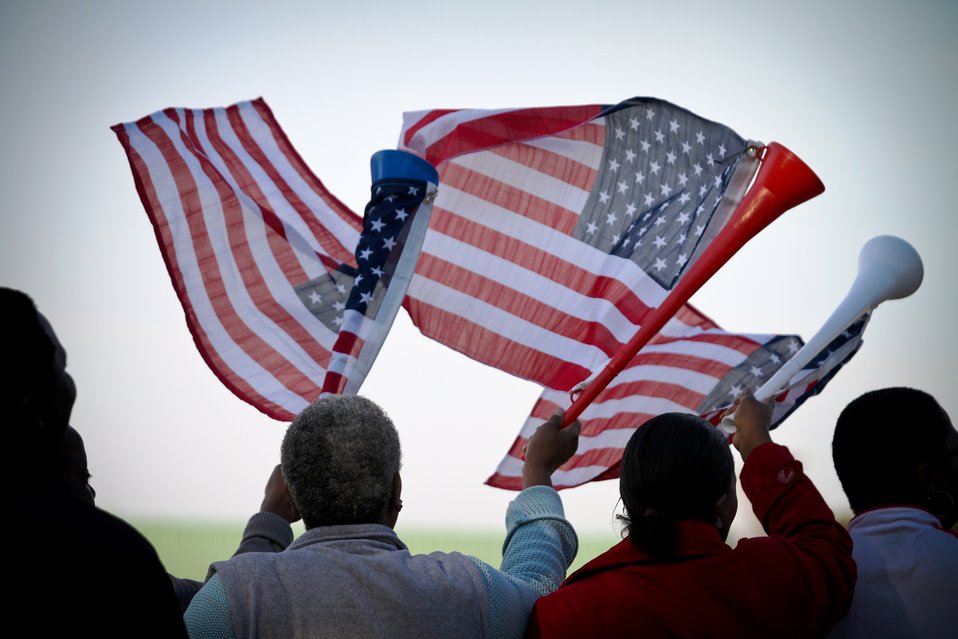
U.S. Embassy Pretoria Staff Fans Show Their Team Spirit

U.S. Embassy Pretoria staff fans cheer on their colleagues in the U.S. Embassy Pretoria vs. British High Commission match on May 28, 2010, in Pretoria, South Africa. The match was part of a series of challenge events aimed at building the friendly rivalry and excitement before the World Cup match between the U.S. National Team and the English National Team in Rustenburg, South Africa, on June 12, 2010.